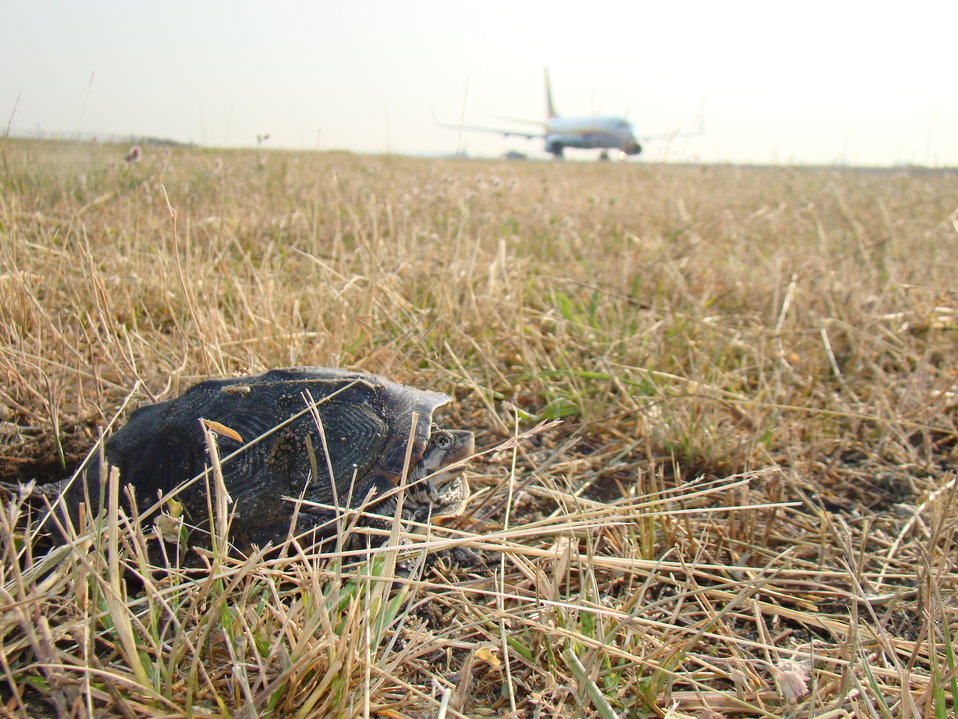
An adult Diamondback terrapin is too close to the runway at John F. Kennedy (JFK) International Airport, New York on May 23, 2012. U.S. Department of Agriculture (USDA) Wildlife Services’ biologist Jenny Mastantuono and her staff work at John F. Kennedy (JFK) International Airport solving wildlife conflicts with people and planes. The Diamondback terrapin is a type of turtle that prefers to live in brackish marshes and the Jamaica Bay Wildlife Refuge around JFK is a favored habitat for these reptiles. In the late spring, they crawl on to land to lay their eggs in the sandy soils near the airport, often crossing runways to do so. Terrapins on the runway pose a threat to aircraft using the runways. If a plane hits the terrapins, their carcass can attract scavengers like gulls, which may pose an even greater danger to airline safety.